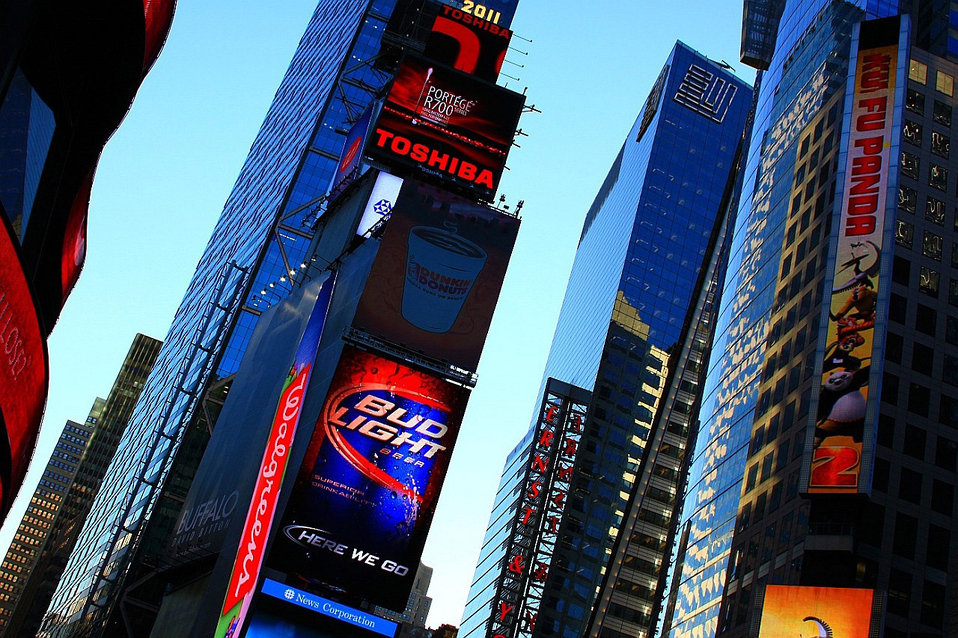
2011 on broadway.